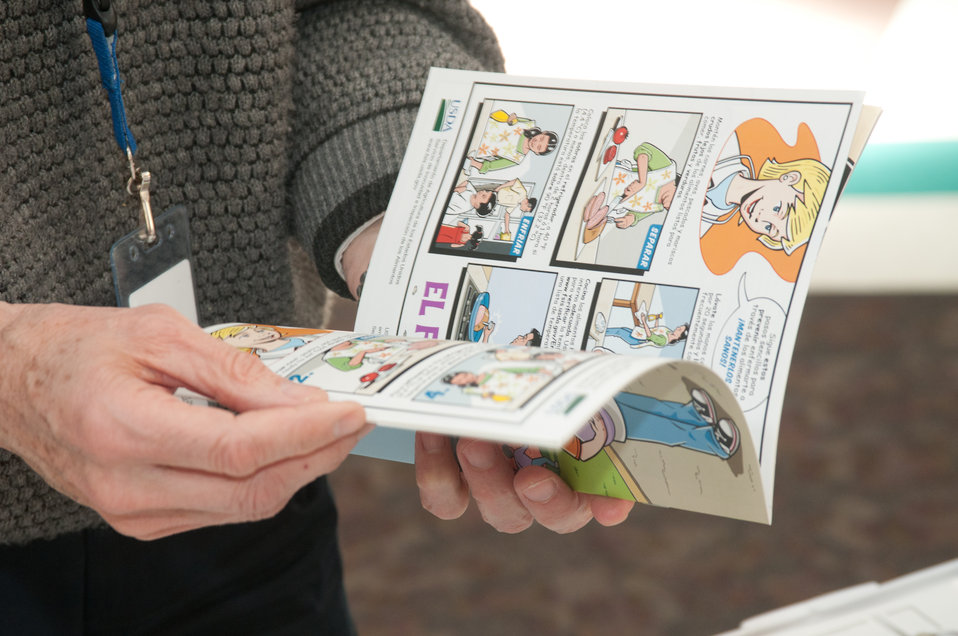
Spanish language comic books that tell about safe food handling were available at the Department of Agriculture's celebration of the Dietary Guidelines for Americans 2010, an informational event in the Whitten Café in Washington, D.C., on Wednesday, March 2, 2011. This first Wednesday event of March, had representatives from Agricultural Marketing Service (AMS); Agricultural Research Service (ARS - including Food and Nutrition Information Center - FNIC, and Food Safety Information Center – FSIC); Economic Research Service (ERS); Food, Nutrition & Consumer Services (FNCS); Food Safety and Inspection Service (FSIS); National Institute of Food and Agriculture (NIFA); USDA Office of Operations (Departmental Management); Food and Drug Administration (FDA); and Sodexo.